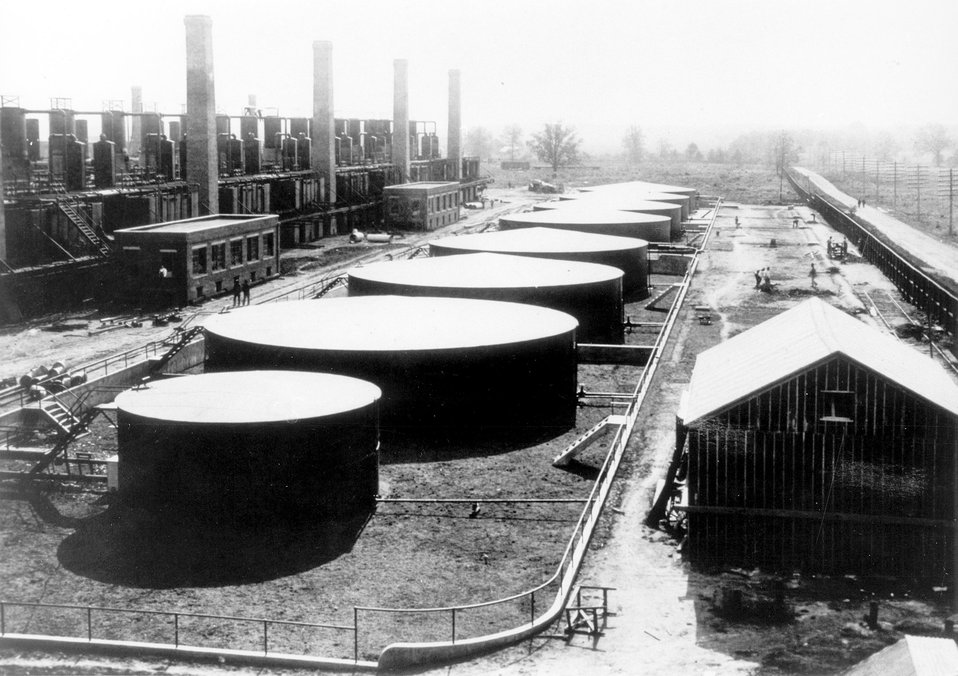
Gasoline storage tanks in NYC during WWI